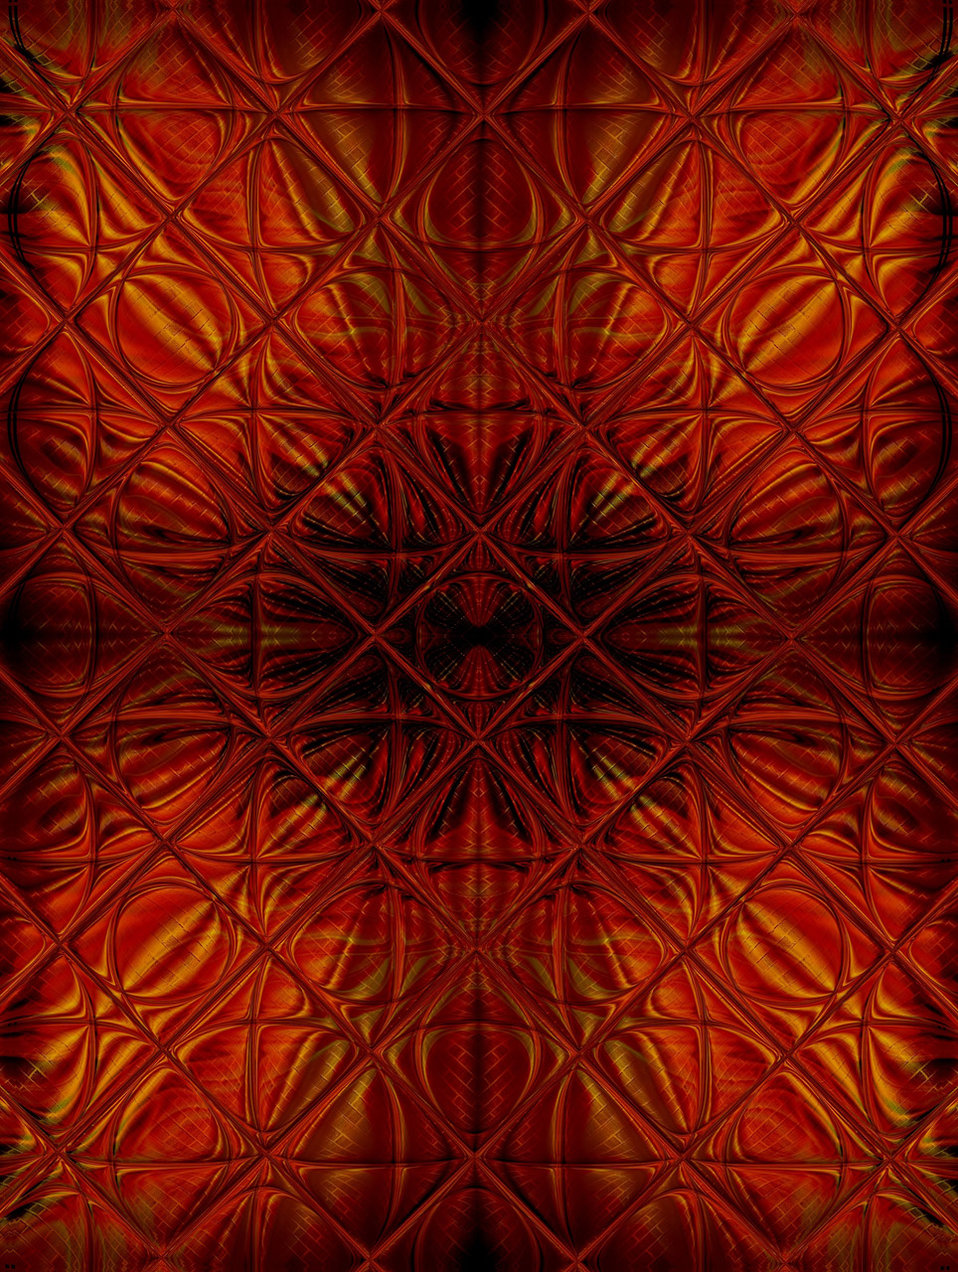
Glass background

Background with glass tiles.